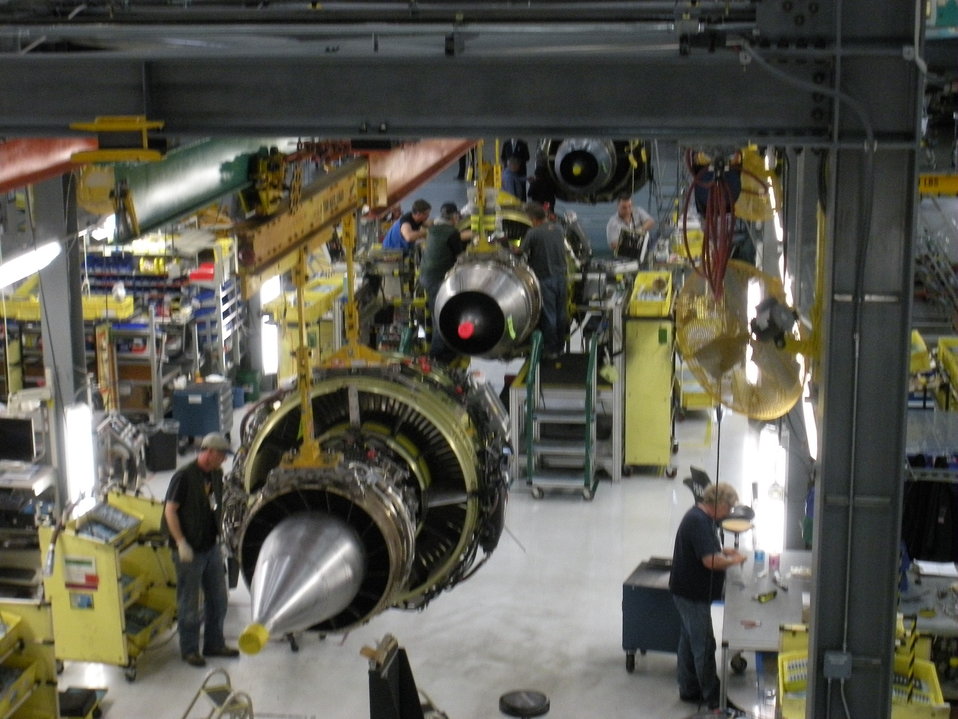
Boeing Plant in Renton, 5/18/2010

Secretary Geithner toured a Boeing 737 plant in Renton, WA on May 18, 2010.